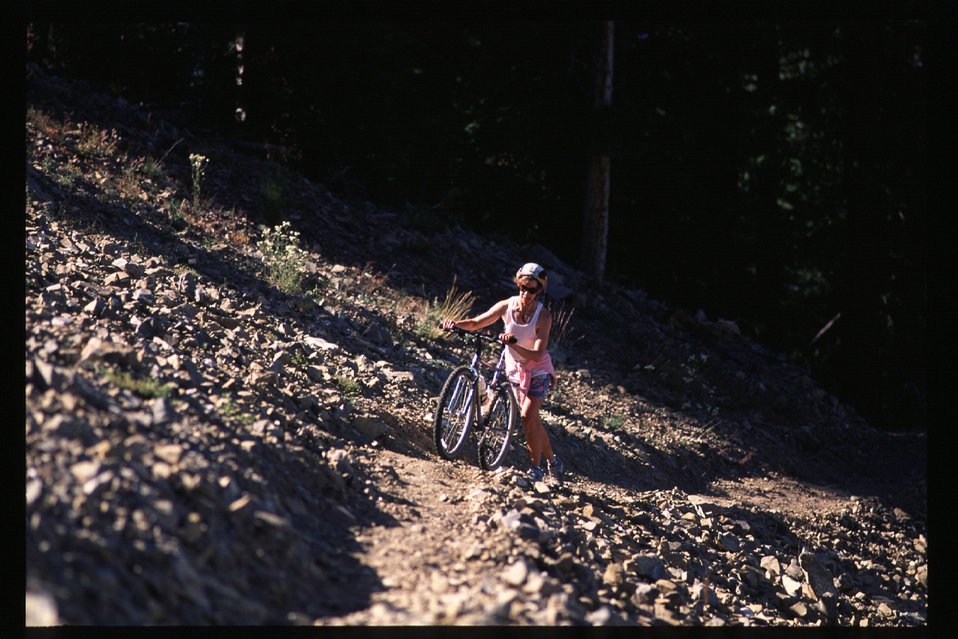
Recreation Scenic Biker Shoshone Field Office USRD Upper Snake River District